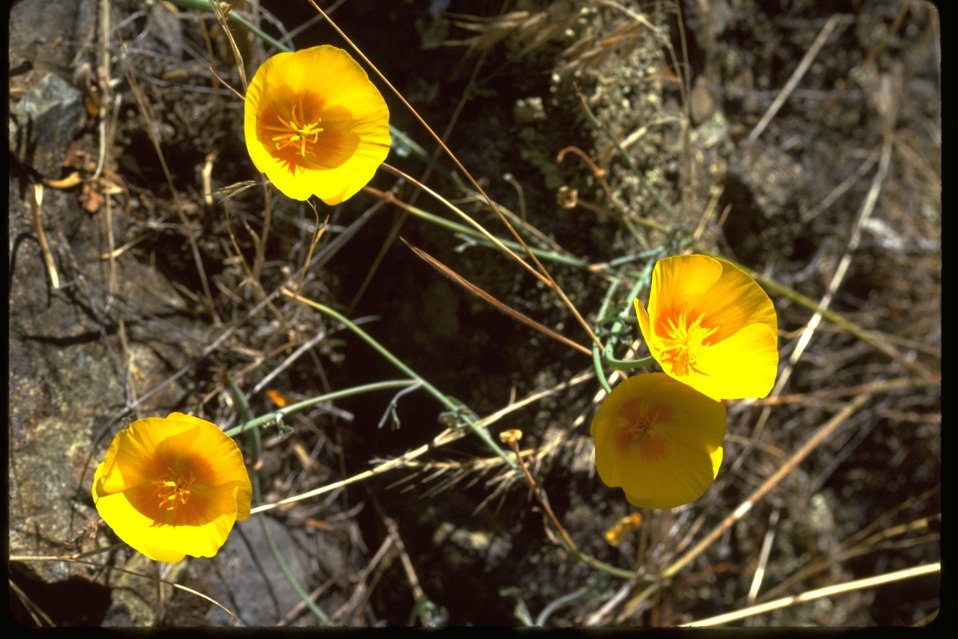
Scotch Creek RNA, ridge southeast of Scotch Creek Falls.